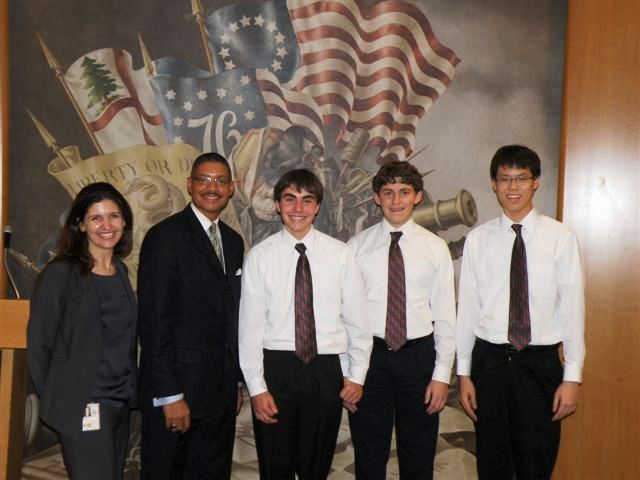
Deputy Director Beckett and Officer Petrillo Meet With Students Joshua Bowman, Joshua Larimer, Jae Seung (Jason) Lee

Deputy Director of the Office of Chemical and Biological Weapons Affairs Johnathan Beckett and science officer Jessica Petrillo meet with students, left to right, Joshua Bowman, Joshua Larimer, Jae Seung (Jason) Lee from Peters Township High School in McMurray, Pennsylvania, at the U.S. Department of State in Washington, D.C, on November 5, 2010. The students are competing in the National History Day Pennsylvania Competition, which is hosted by the Senator John Heinz History Center.